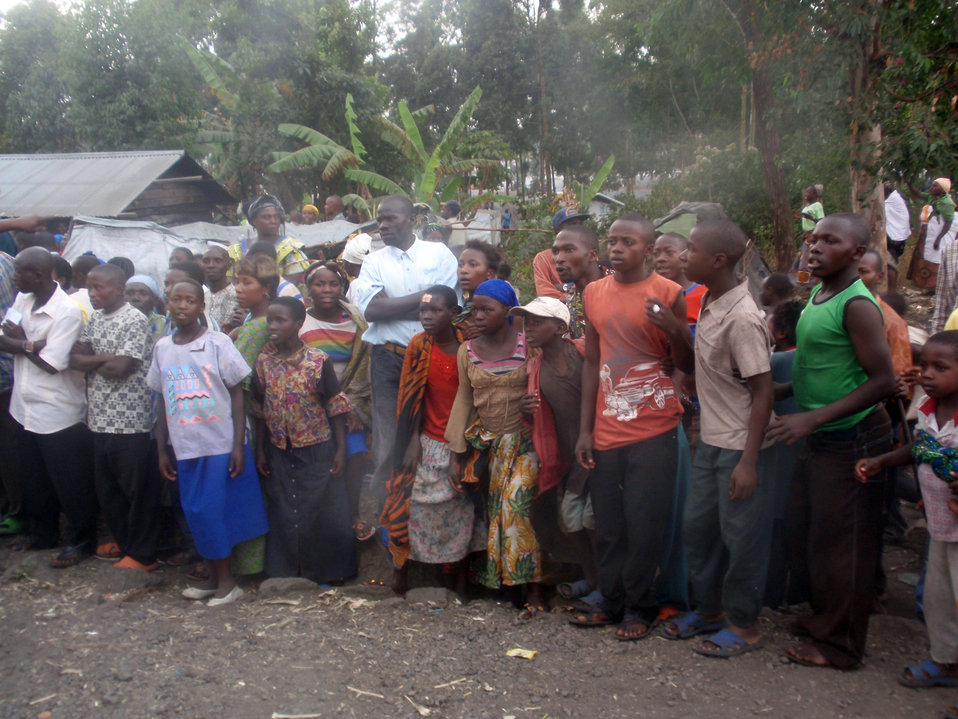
Behind the Scenes: Mugunga IDP Camp

The scene during the arrival of U.S. Secretary of State Hillary Rodham Clinton at the Mugunga Internally Displaced Person (IDP) Camp in Goma, Democratic Republic of Congo August 11, 2009.